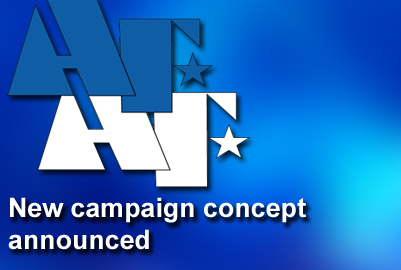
AFAF Campaign changes

Officials have announced a new concept for the annual Air Force Assistance Fund campaign.